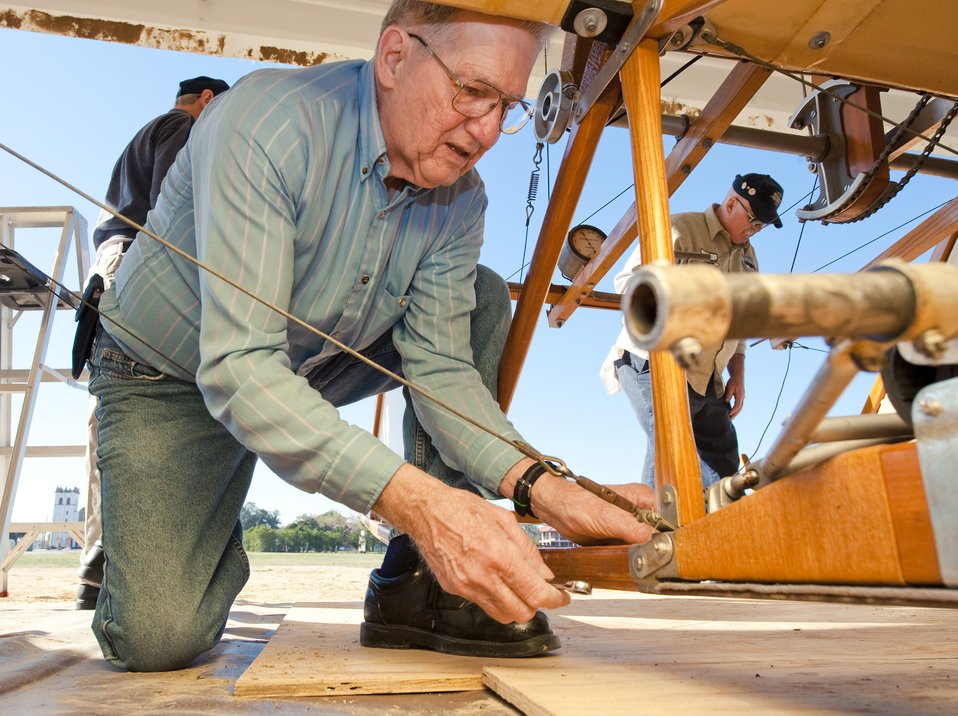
Wright

Frank Goepferich tightens a structural cable to the under carriage of a Wright